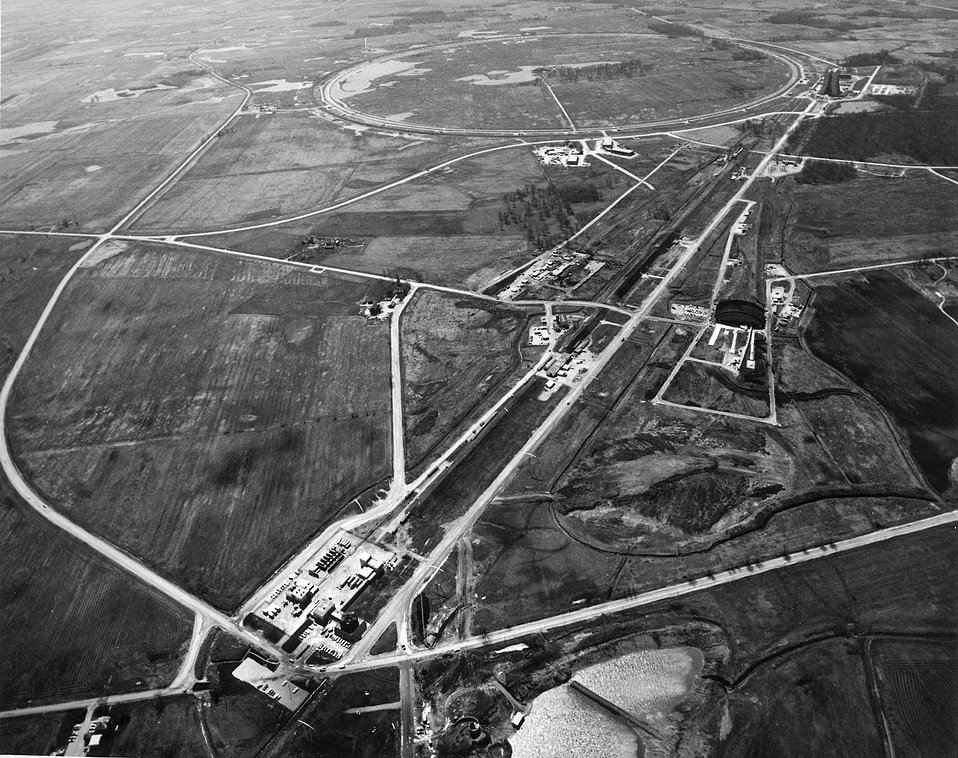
Aerial view AEC NAL experimental area is in the foreground leading to the main ring in the background.
c.1973